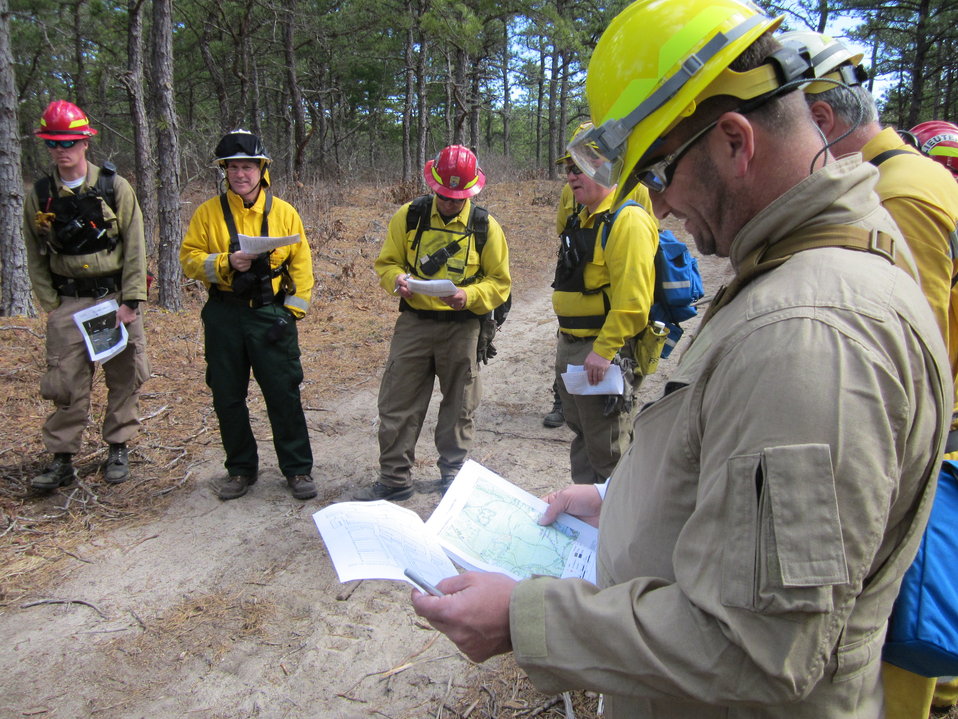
Getting Oriented to Controlled Burn

Mashpee, Massachusetts, April 5, 2012. Firefighters consult their maps at a pre-burn safety briefing for a controlled burn on the Town of Mashpee Holland Hill Barrens area of Mashpee National Wildlife Refuge. The burn reduced fire risk to neighboring homes and improved habitat for the New England cottontail. It was conducted by the Town of Mashpee, U.S. Fish and Wildlife Service, State of Massachusetts Department of Conservation and Recreation, and Northeast Forest and Fire Management.